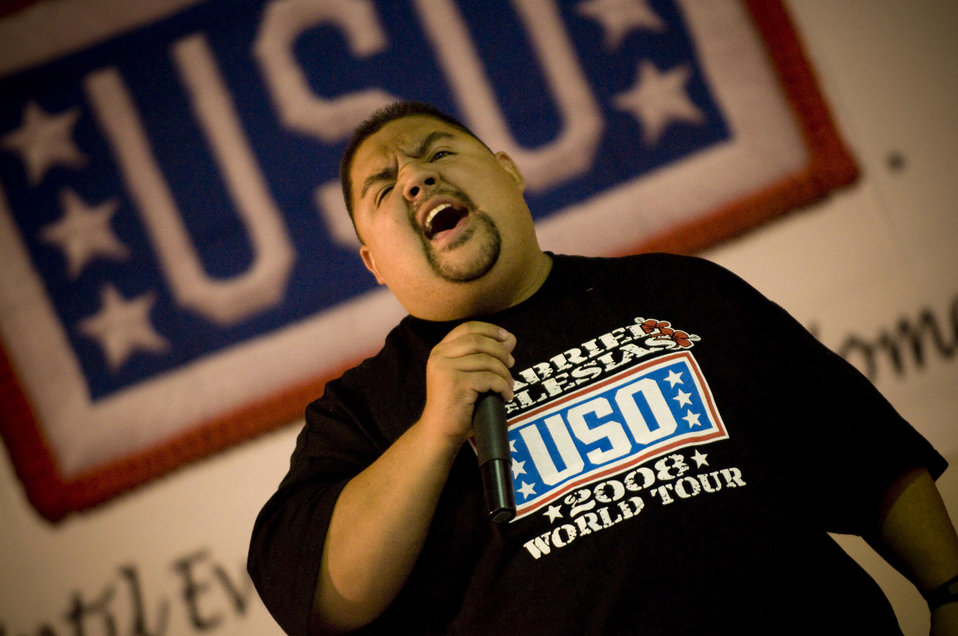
Around the world in 8 days

Gabriel Iglesias screams while he recounts his